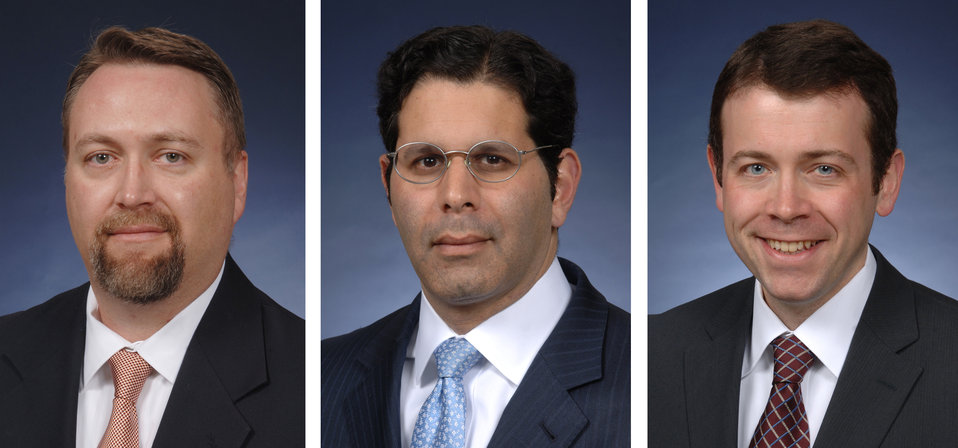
2013 Federal 100 Awardees

Jon Boyens, Jeremy Grant and Adam Sedgewick